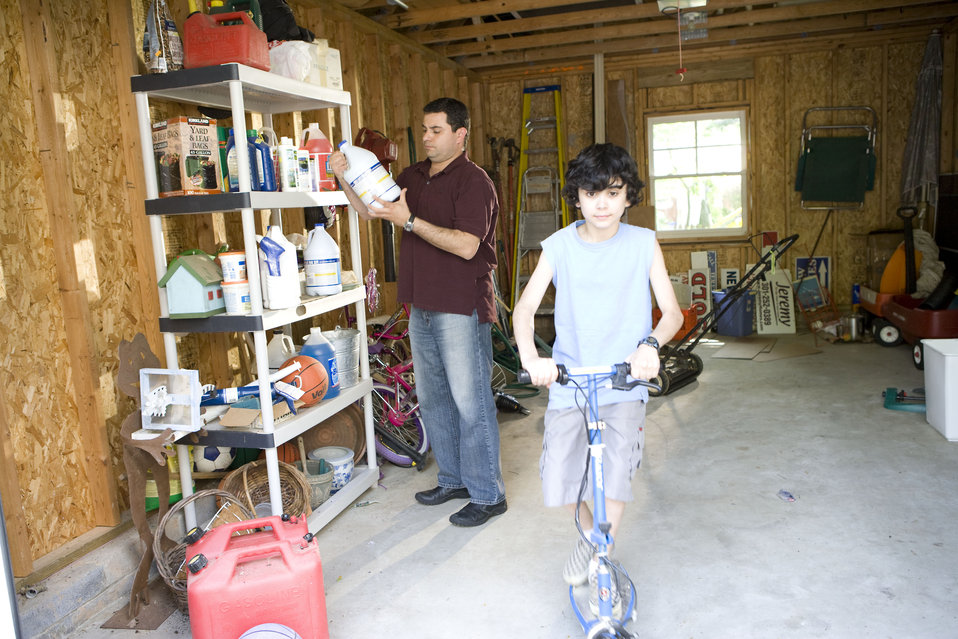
Here we see a father organizing his garage contents, while his son was about to embark on a scooter ride.